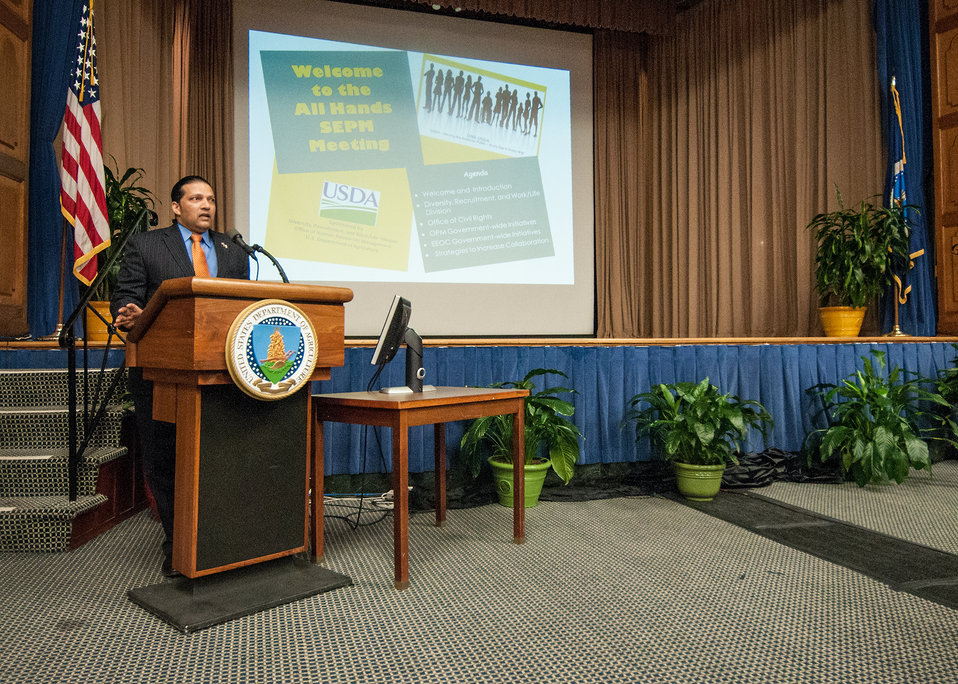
U.S. Department of Agriculture (USDA) Office of Human Resources Management (OHRM) Diversity Recruitment and Work/Life Division Director and Master of Ceremonies Monshi Ramdass introduces the speakers at the First Annual All Hands Special Emphasis Program Managers (SEPM) Meeting at the U.S. Department of Agriculture Jefferson Auditorium in Washington, D.C. on Wednesday, Mar. 13, 2013.